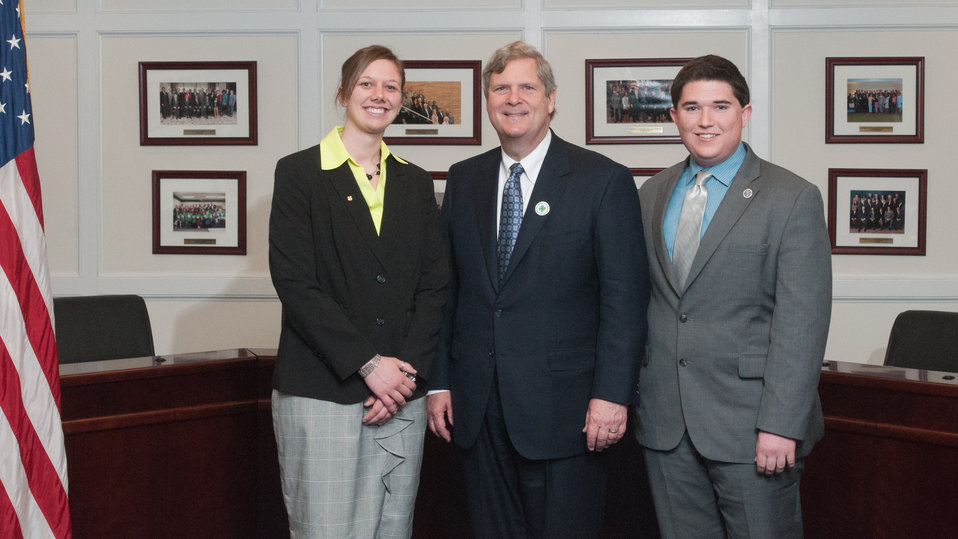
U.S. Department of Agriculture (USDA) Secretary Tom Vilsack (center) meets with the 4-H College Students (left-right) Kayla Oberstadt (WI) and Jared Padgett (FL), during the 2013 National 4-H Conference, on Monday, April 8, 2013 in Chevy Chase, MD. The youth delegates are in grades 10-12 (15-19 years old). The purpose of the conference is to 1) engage 4-H youth in personal development experiences that will increase knowledge, resources, and skills; 2) discuss topics affecting youth and 4-H programming nationwide; and 3) empower and mobilize 4-H youth to create positive social change in their communities in a meaningful and genuine way. The conference also reinforces the rich history of 4-H and its valuable tie to USDA, Cooperative Extension and the Land-Grant University System.